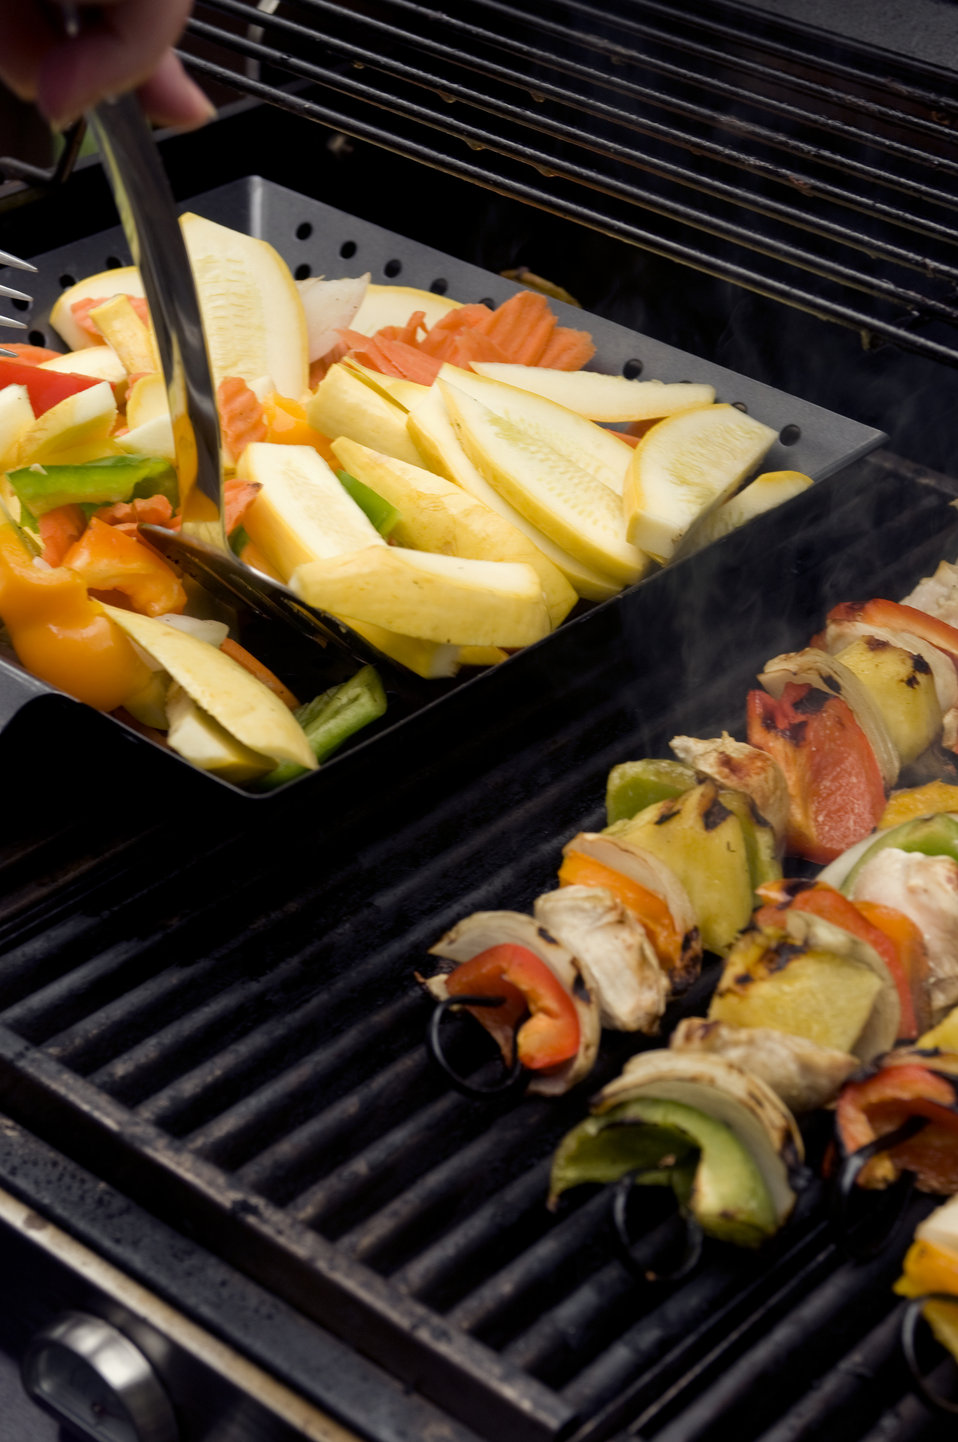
This image depicts freshly-prepared kabobs (Lt), which had been set atop an outdoor stainless steel gas grill, and were cooking. The skewers consisted of chicken, peppers, onions, and pineapple. Note that the chef was attending to a grilling dish, also set top the grill, which was filled with an additional assortment of vegetables, being prepared as an accompanying dish to the kabobs (Rt).